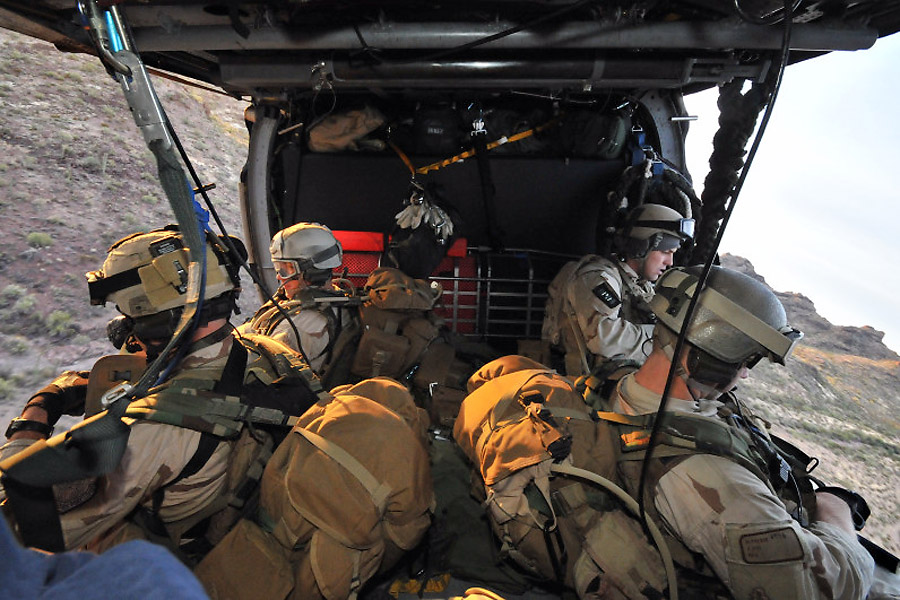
Exercise Angel Thunder provides lifesaving training

Pararescuemen from the 48th Rescue Squadron out of Davis-Monthan Air Force Base, Ariz., fly aboard an HH-60G Pave Hawk from the 129th Rescue Wing out of Moffett Federal Airfield, Calif., during a rescue scenario Dec. 12 at Davis-Monthan AFB. Exercise Angel Thunder is a personnel recovery exercise designed to train a joint, interagency and international audience in effectively executing the personnel recovery mission.